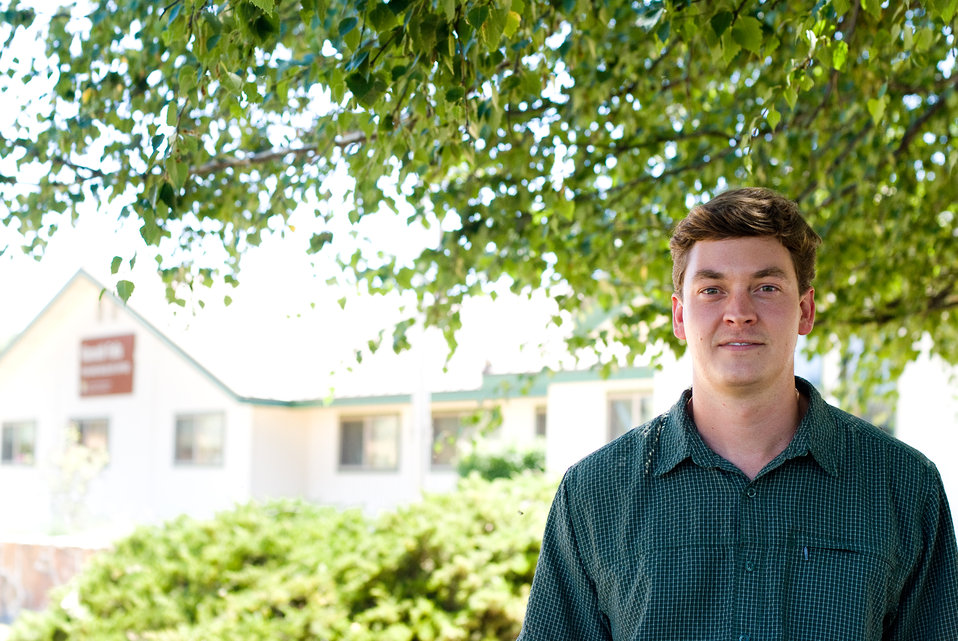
Nolan Banish, Fish Biologist with the Klamath Falls FWS Office

Nolan Banish - Fish Biologist - Klamath Falls FWS